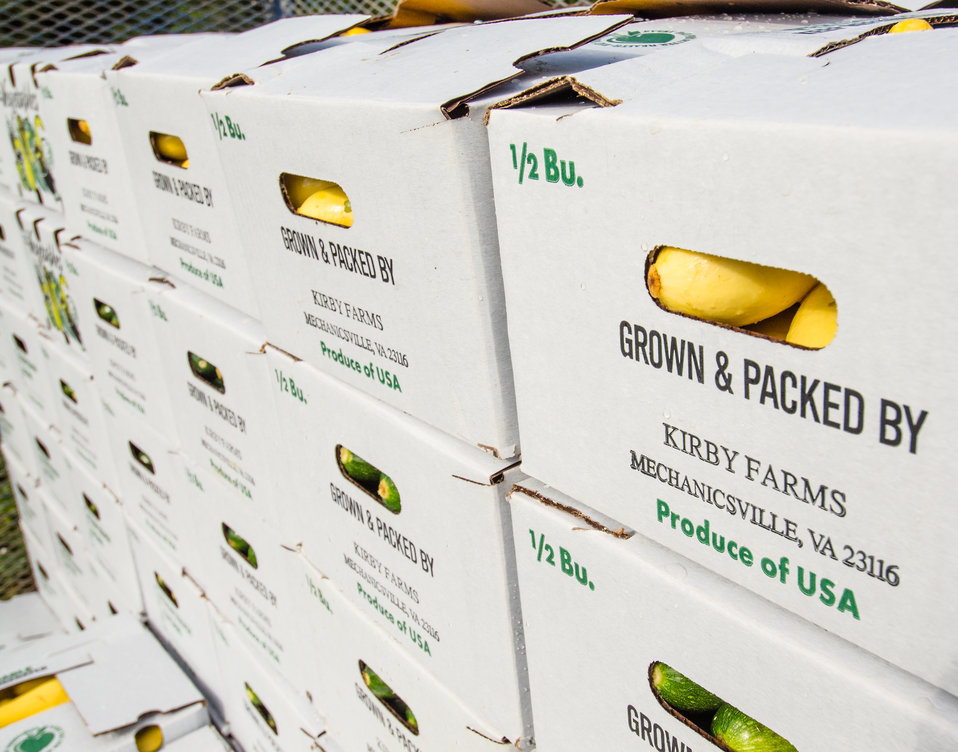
1/2-bushel boxes of green and yellow squash sit on a processing trailer. The rinsed, packed and just-picked yellow squash are ready to be sent to a shipping warehouse on Kirby Farms in Mechanicsville, VA on Sep. 20, 2013. Kirby Farms is a third-generation family farm that covers 500 acres, and generates produce and grains on a year-around operation.